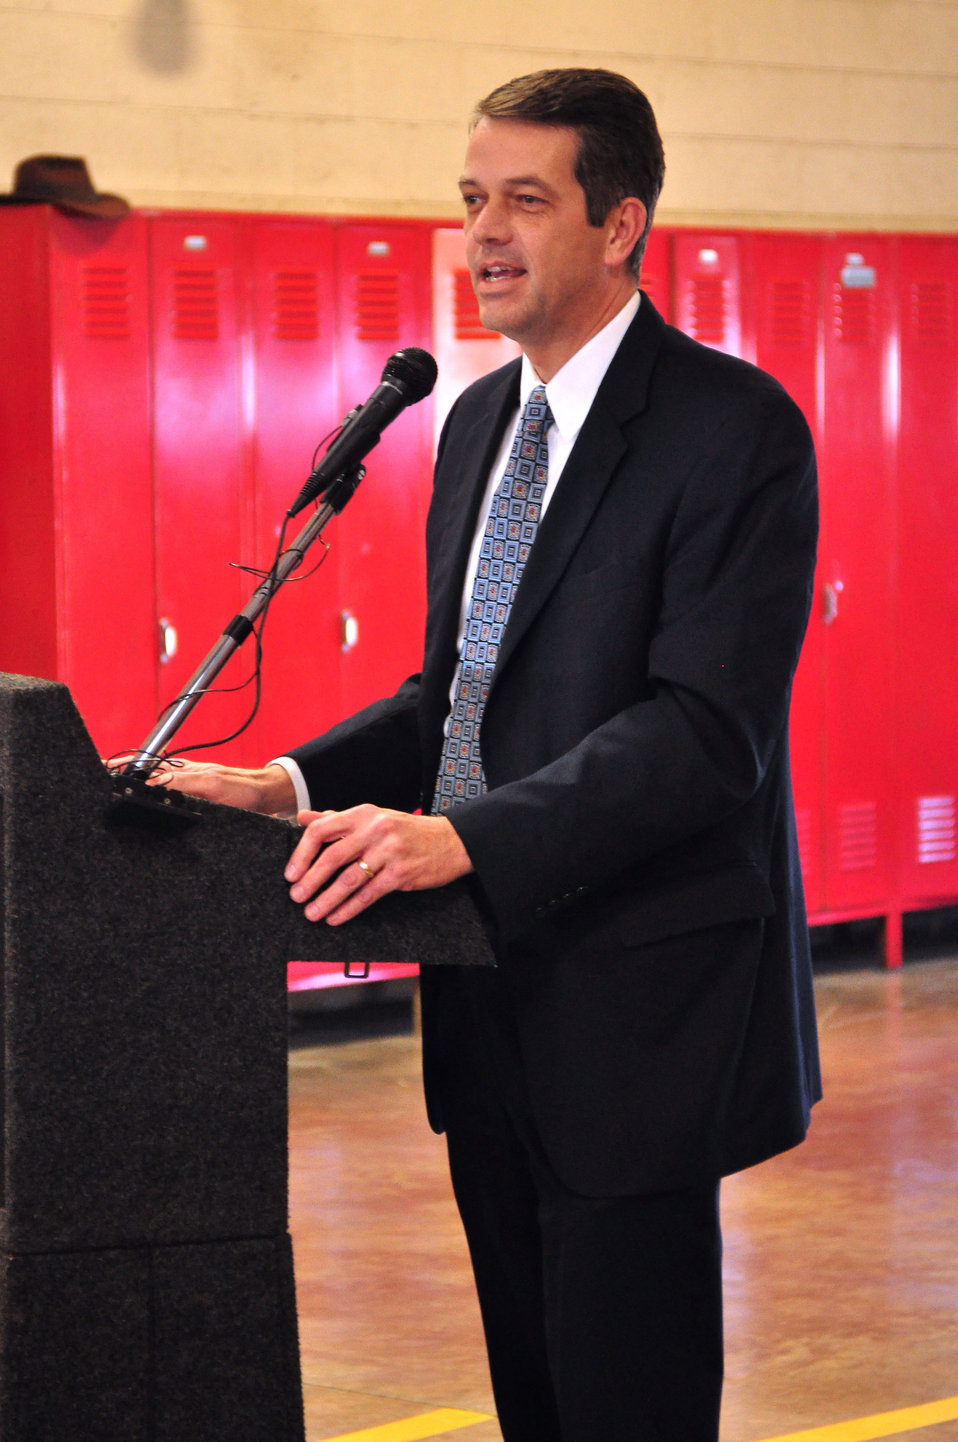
Last Part of K-25 Coming Down Oak Ridge 2013

13-157-1 DOE photo Lynn Freeny 12-19-2013 Mark Whitney DOE ORO EM Manager Oak Ridge Tennessee